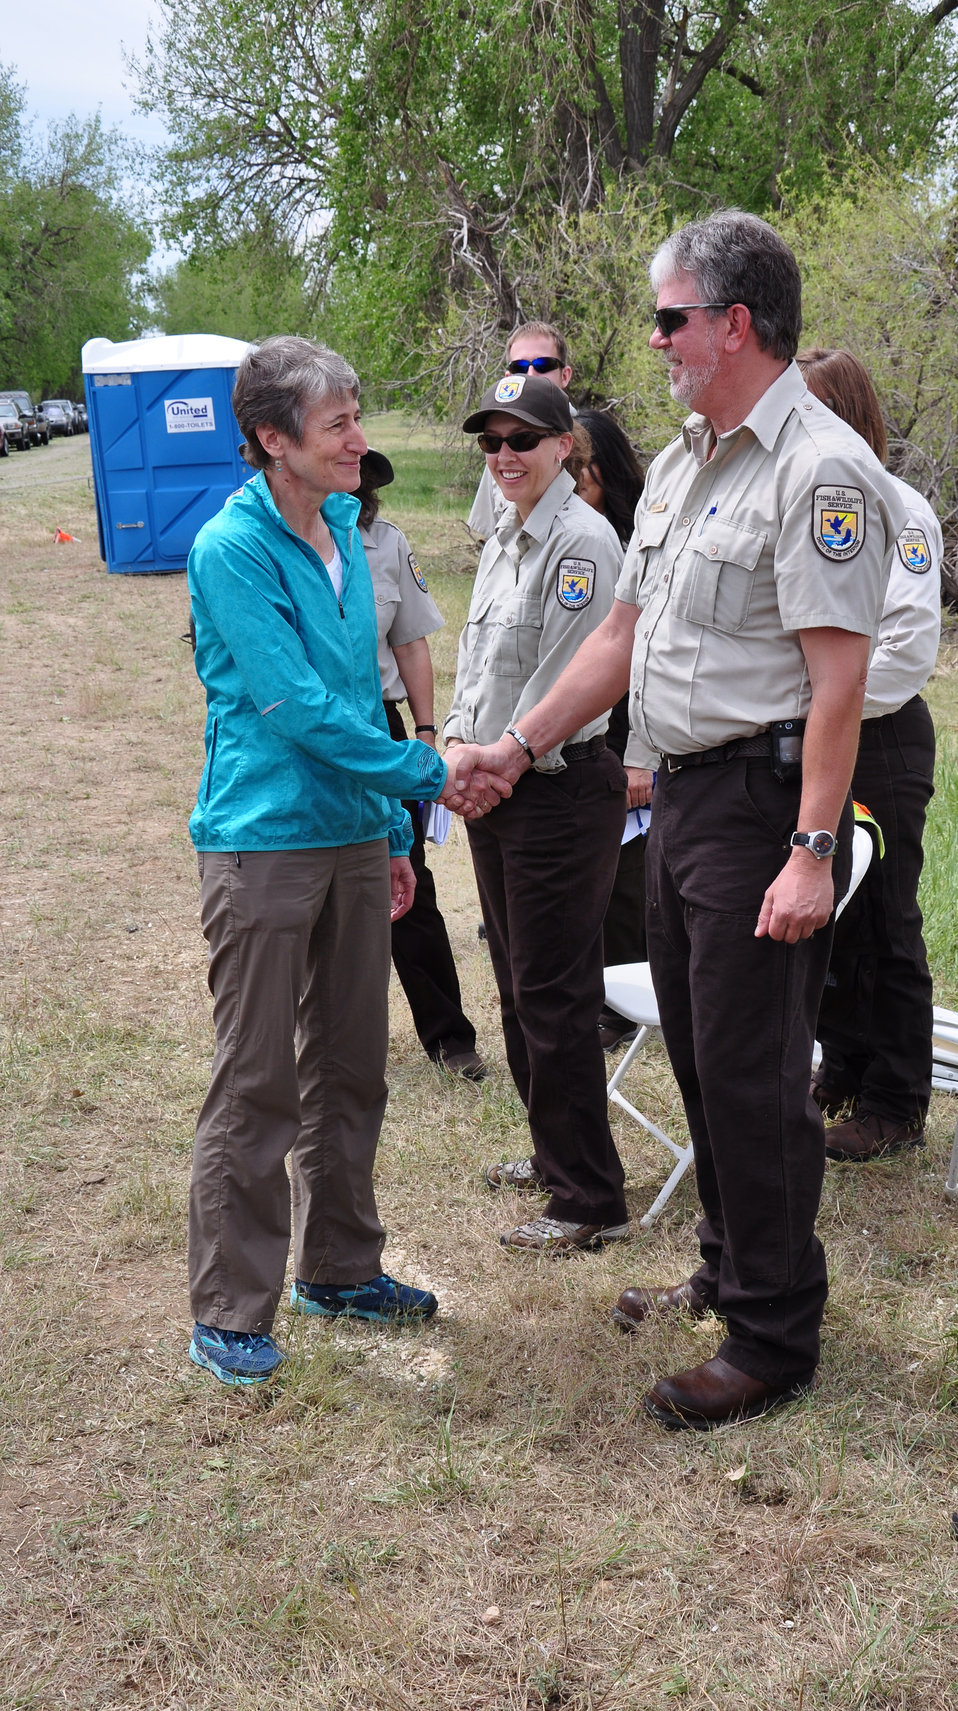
Secretary Jewell Greeting Refuge Staff